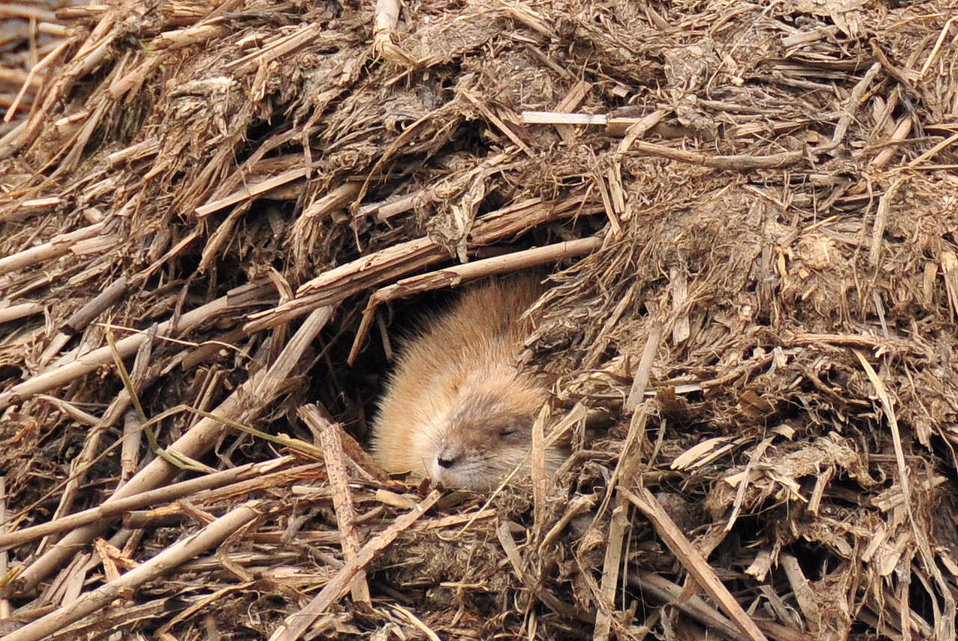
Sleeping muskrat Lacreek National Wildlife Refuge

Muskrats sleeping in the opening of its den on Lacreek NWR Photo: Tom Koerner/USFWS